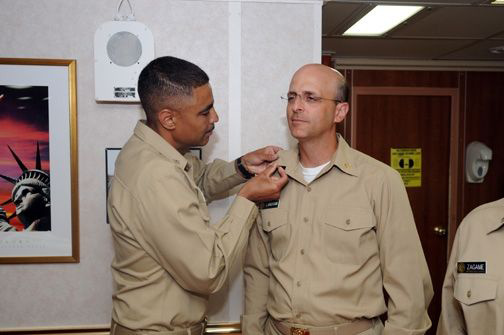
This image was taken aboard the U.S.S. Kearsarge, by Mass Communication Specialist, 3rd Class, Christopher Lange, and depicts U.S. Public Health Service (USPHS), CAPT Jos�elardo pinning on new collar devices during CDR Gregory Langham's, USPHS, promotion ceremony.